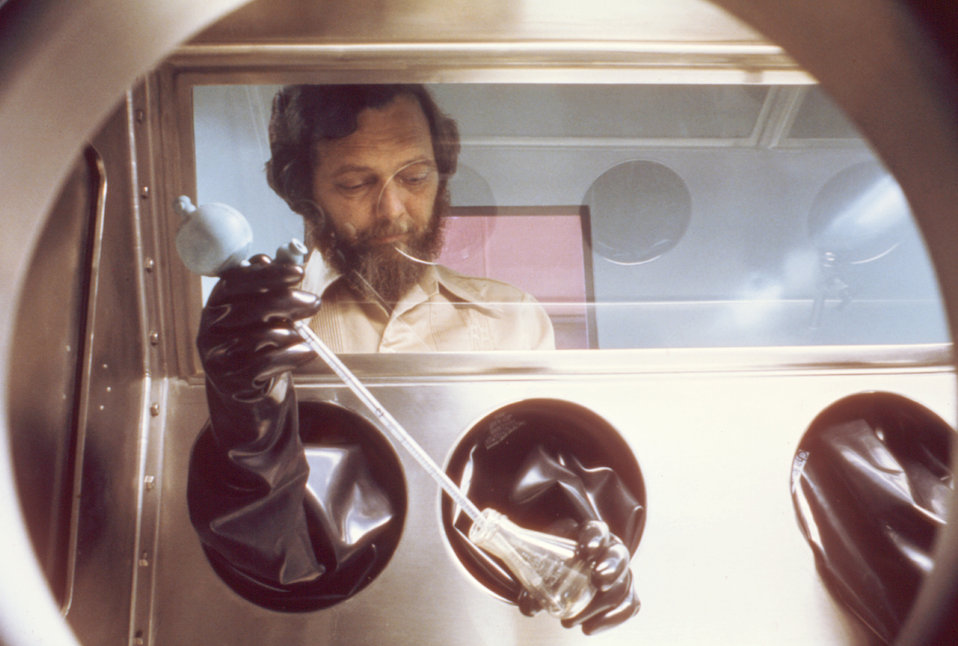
A 1977 photograph depicting Dr. Karl M. Johnson in an early maximum containment laboratory.